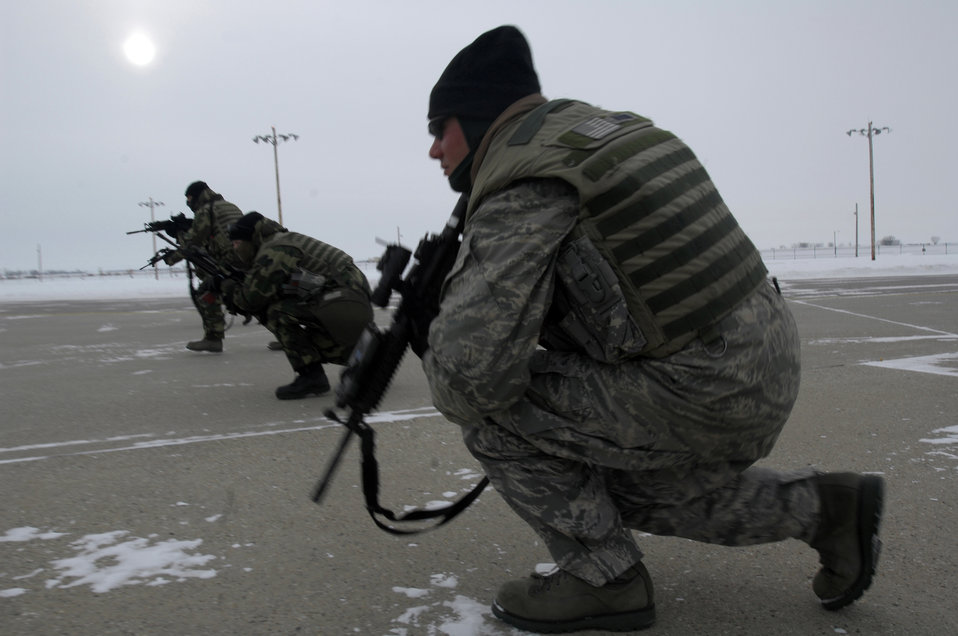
Blue Coach improves security forces Airmen tactics, training

Airmen from the 5th Security Forces Squadron endure the harsh cold during the Blue Coach Training Initiative at Minot Air Force Base, N.D., Jan 8. A Navy Sea, Air and Land team is helping to train 200 Minot security forces members on recapturing and combat tactics by April.